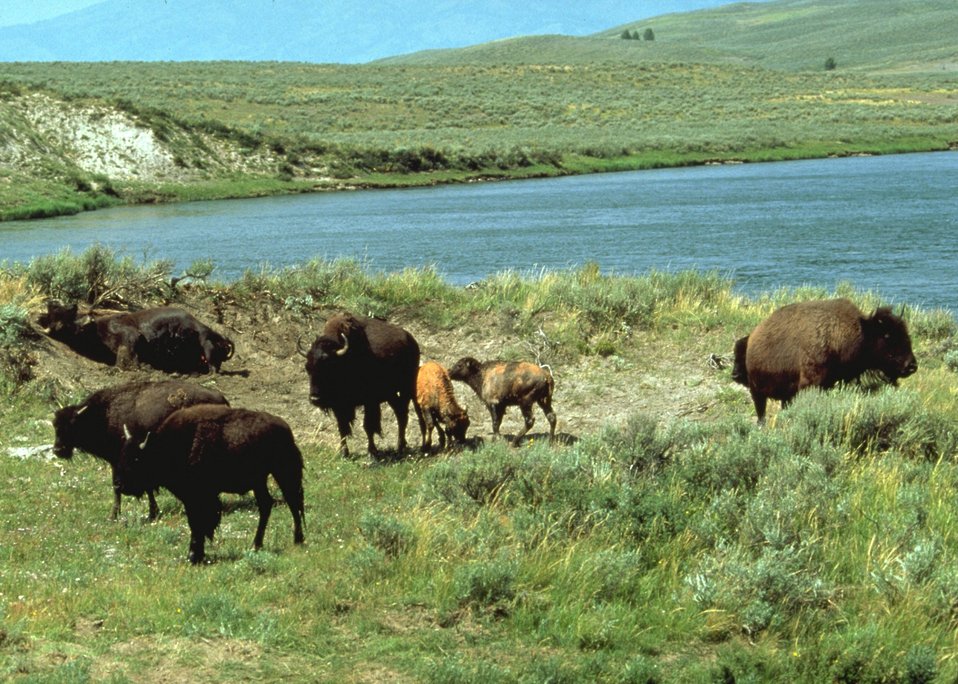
Grazing buffalo.